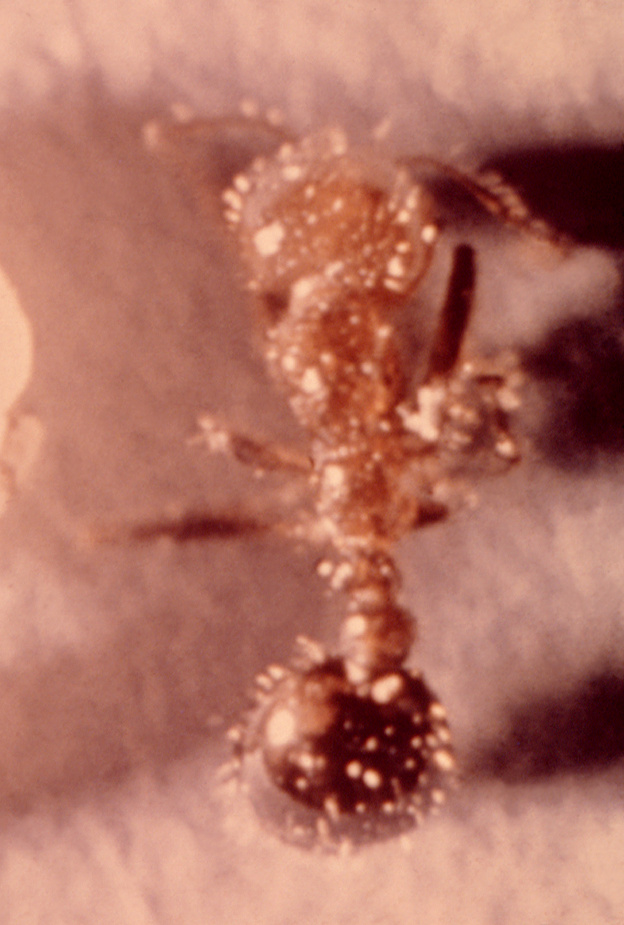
This image depicts a dorsal view of an imported 'worker' fire ant, Solenopsis saevissima var. richteri.